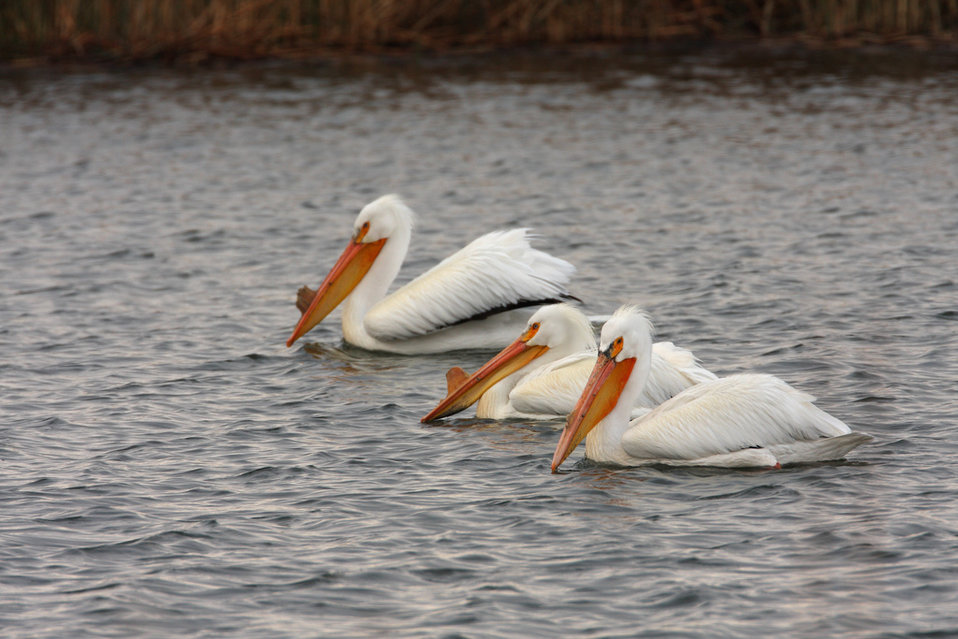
white pelicans

Malheur National Wildlife Refuge, OR